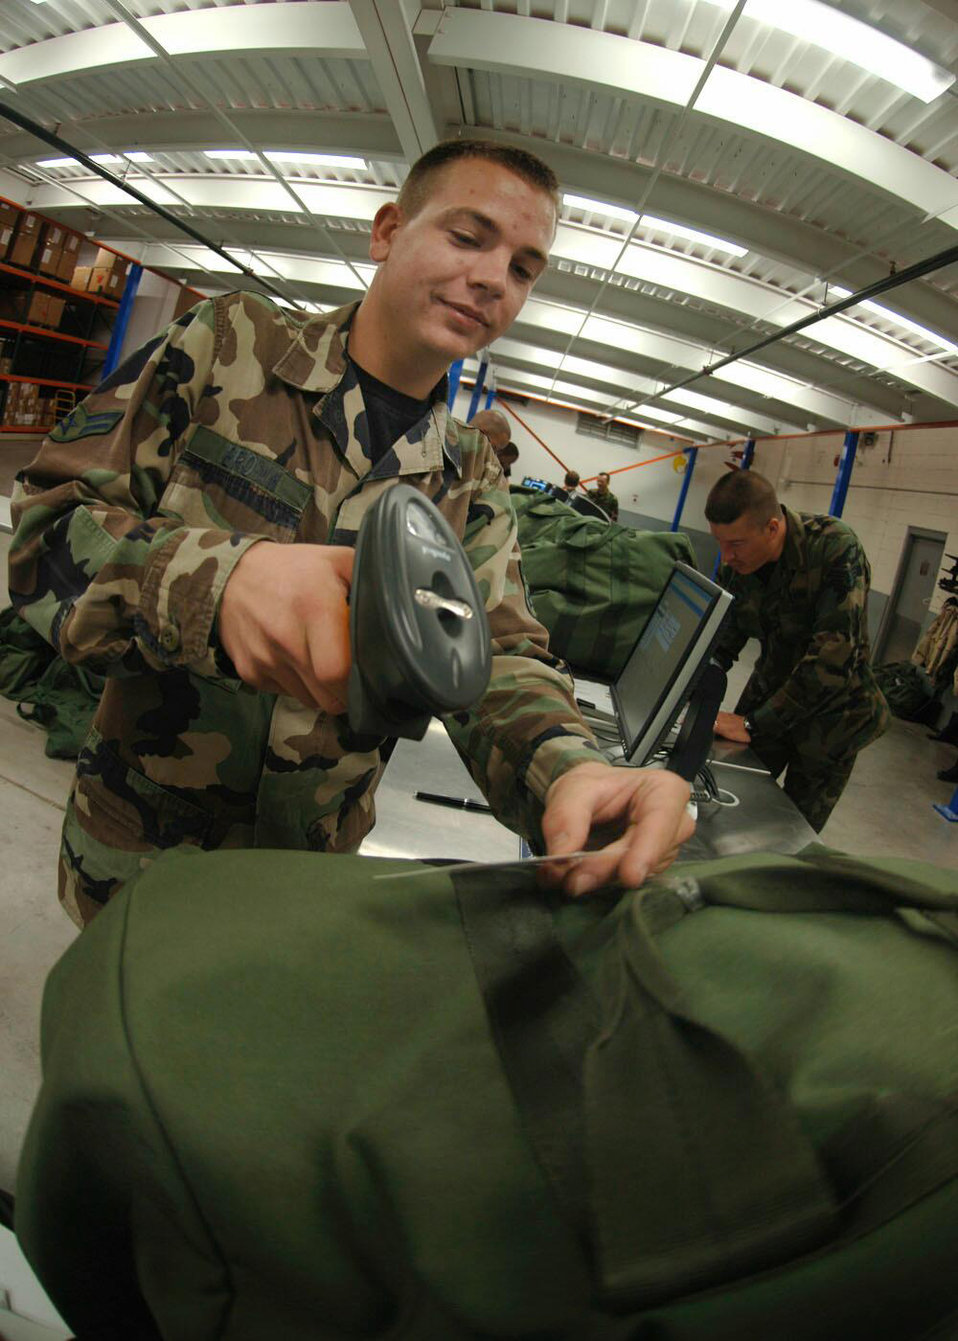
Lining up, moving out

DAVIS-MONTHAN AIR FORCE BASE, Ariz. -- Airman 1st Class Justin Brown scans a bag for one of about 1,500 Airmen as they process through the deployment line here in preparations for an upcoming air and space expeditionary cycle.